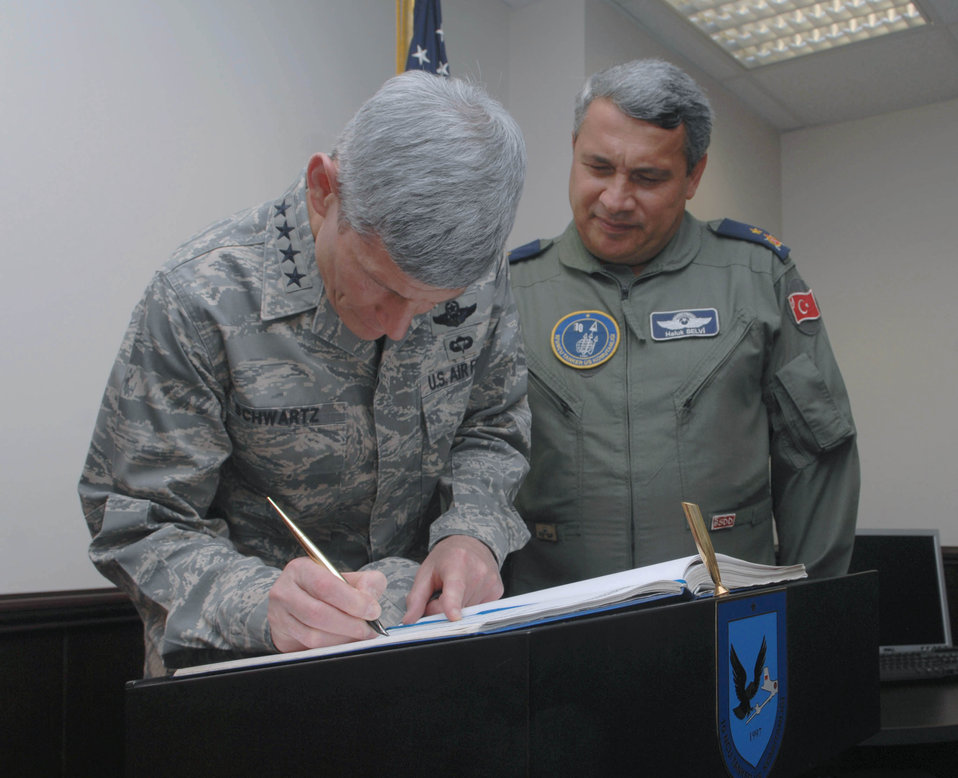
CSAF visits Incirlik

Turkish air force Brig. Gen. Haluk Selvi observes as Air Force Chief of Staff Gen. Norton Schwartz signs the honor book for the 10th Tanker Base Command July 21, 2010, at Incirlik Air Base, Turkey. Signing the book is a 10th Tanker Base command tradition when distinguished visitors arrive here. General Selvi is the 10th Tanker Base commander.